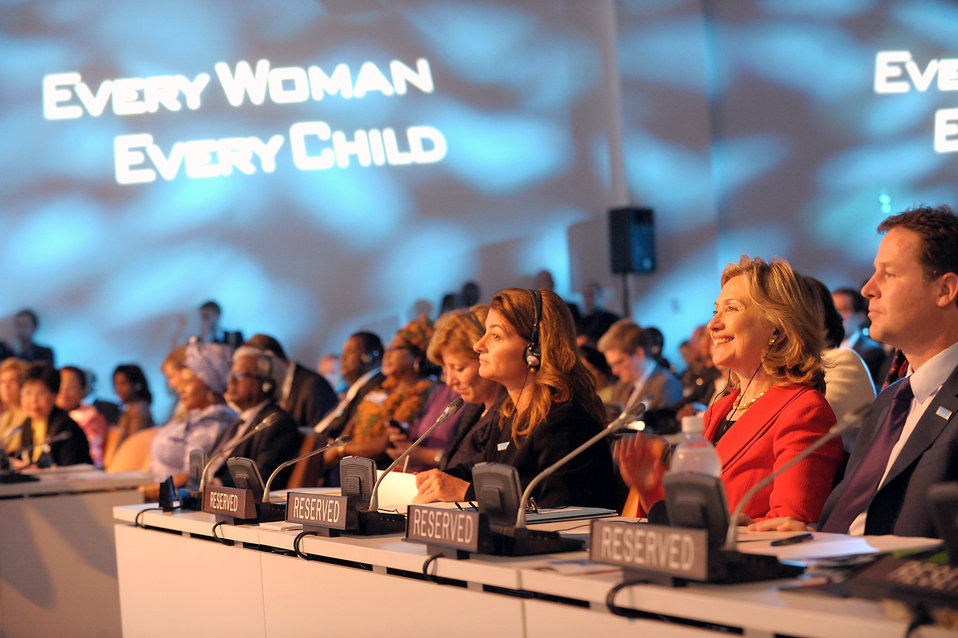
Secretary Clinton Participates in the 'Every Woman, Every Child' Event

U.S. Secretary of State Hillary Rodham Clinton participates in the 'Every Woman, Every Child' event at the UN North Lawn Building ECOSOC Chamber in New York, New York, on September 22, 2010.